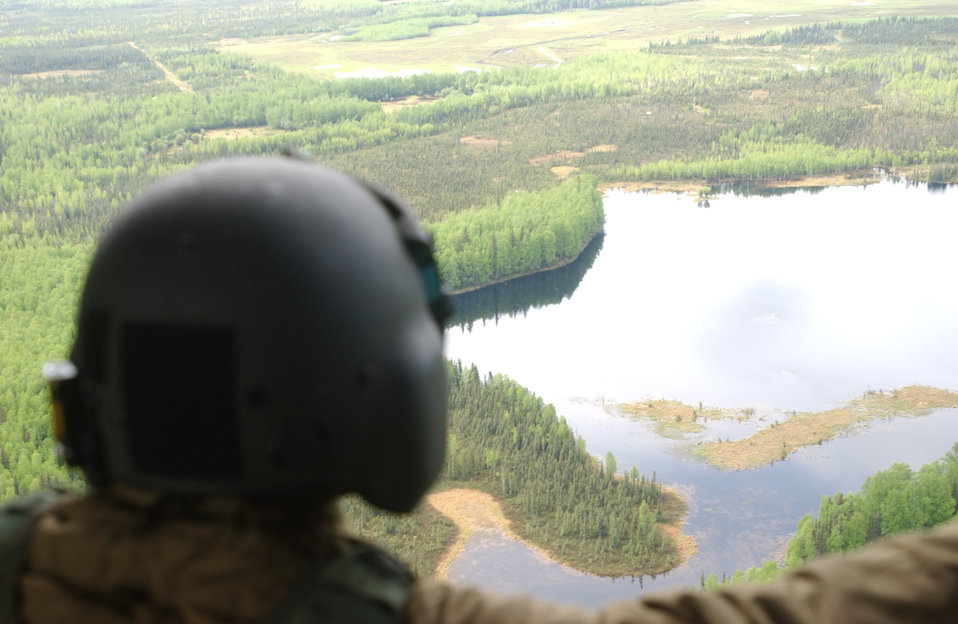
Leap of faith

OVER ALASKA -- An Airman assigned to the 3rd Air Support Operations Squadron at Fort Wainwright Army Airfield, Alaska, jumps from a Blackhawk helicopter May 25 during training.